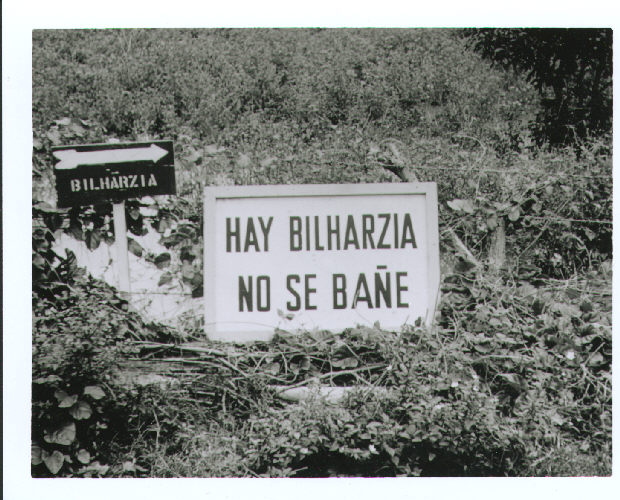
Schistosomiasis Warning Sign, Puerto Rico, 1954.